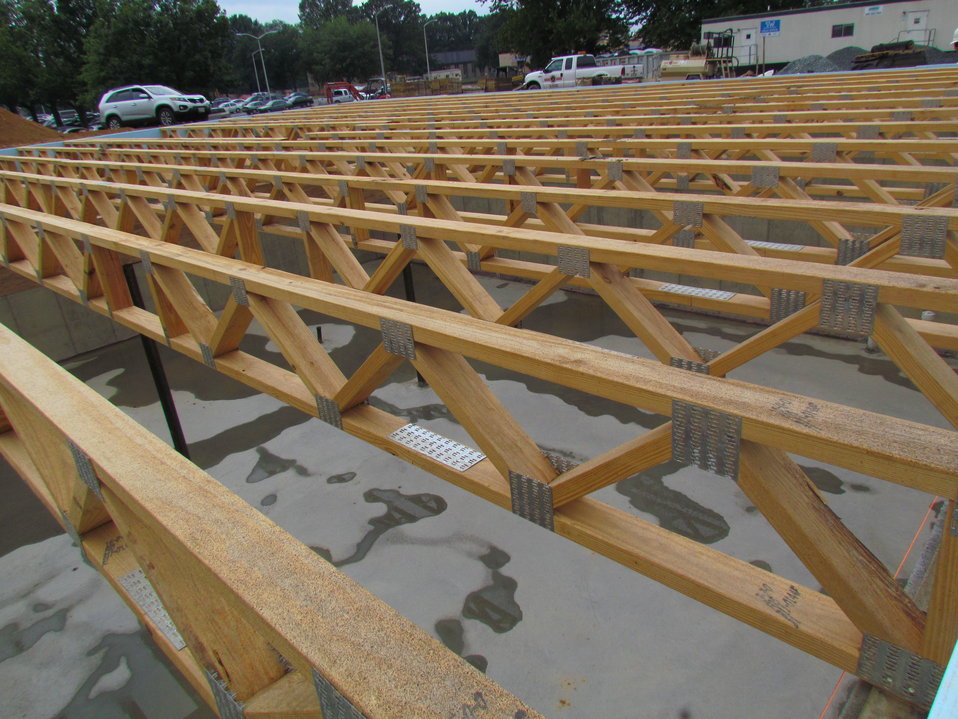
Net-Zero Energy Residential Test Facility - Picture showing concrete basement slab in place (darker areas shown on slab are remnants of water from passing shower).